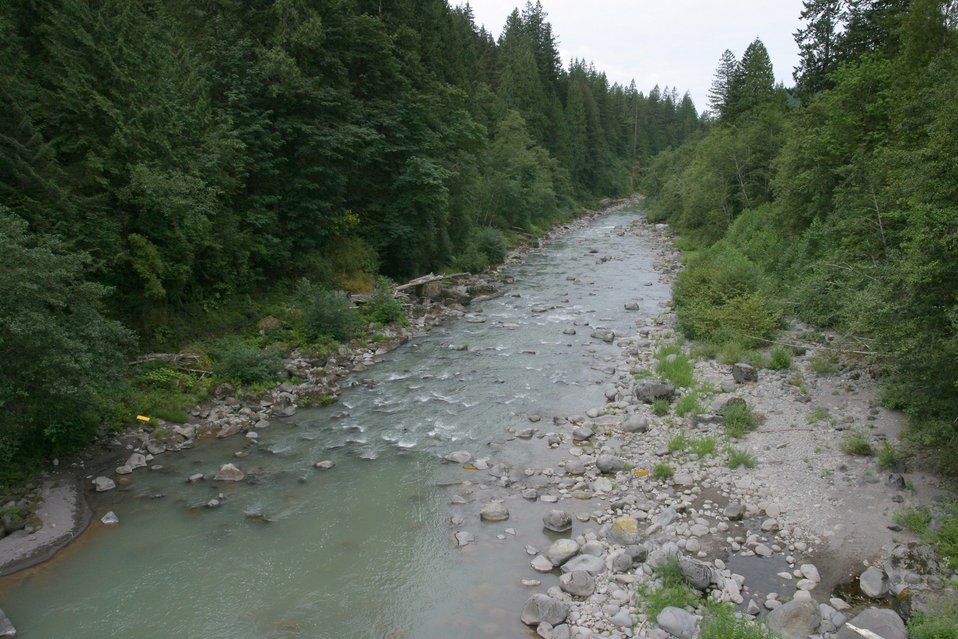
Sandy River just below Marmot Dam. Marmot Dam is scheduled to be removed in 2006.